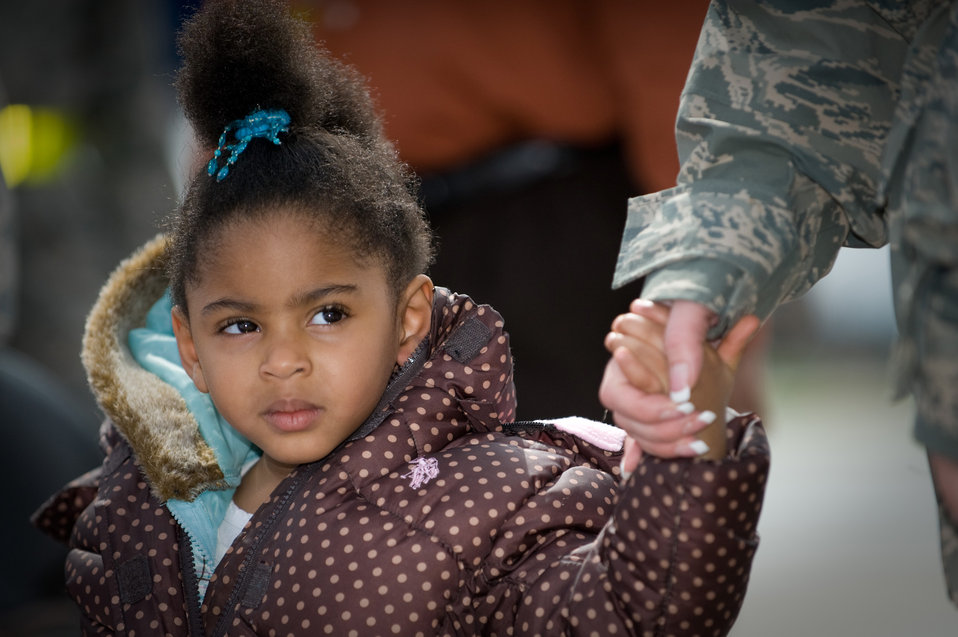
Operation Pacific Passage

An Airman helps a child from a chartered aircraft that arrived from Japan, March 25, 2011, at Travis Air Force Base, Calif. Following the earthquake and tsunami that hit Japan on March 11, hundreds of family members from military bases in Japan voluntarily relocated to the U.S.